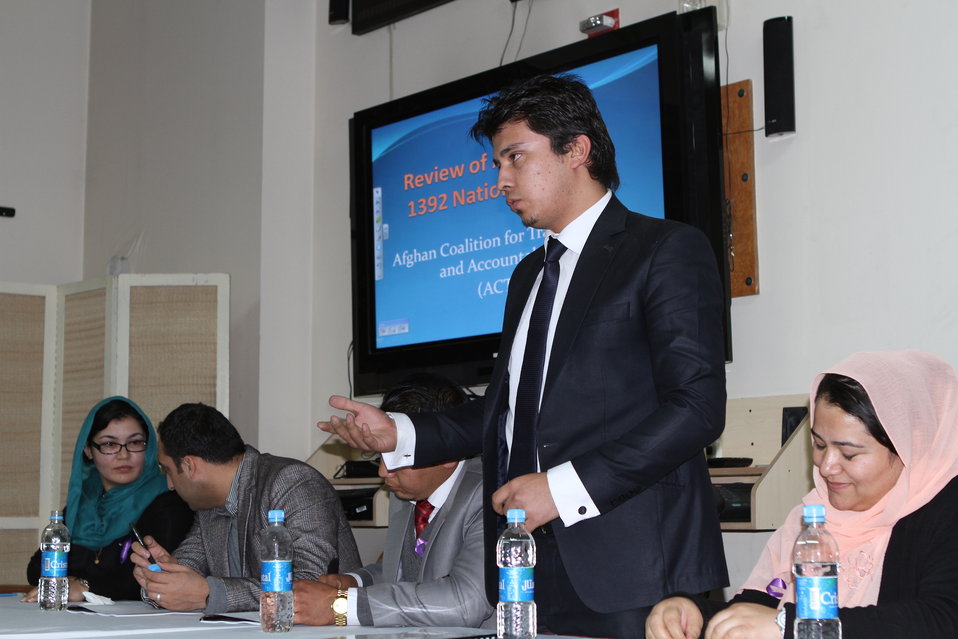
Presentation of the ACTA Civil Society analysis of the FY 1392 Afghan national budget